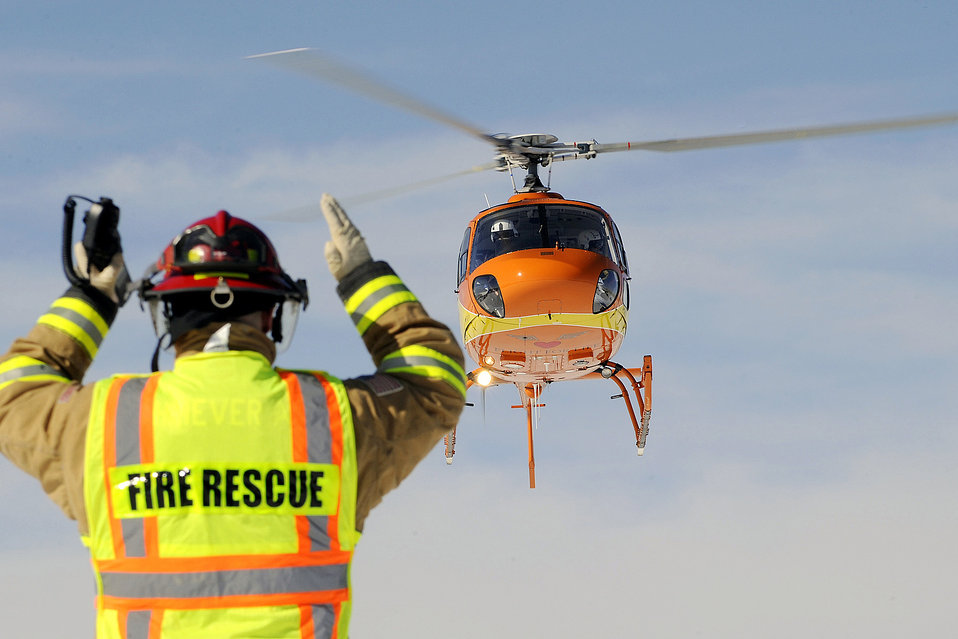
Schriever trains for emergencies

A Flight for Life helicopter is guided by a base fireman during an exercise Feb. 10, 2010, at Schriever Air Force Base, Colo. The helicopter and crew added to the realism of the exercise scenario.